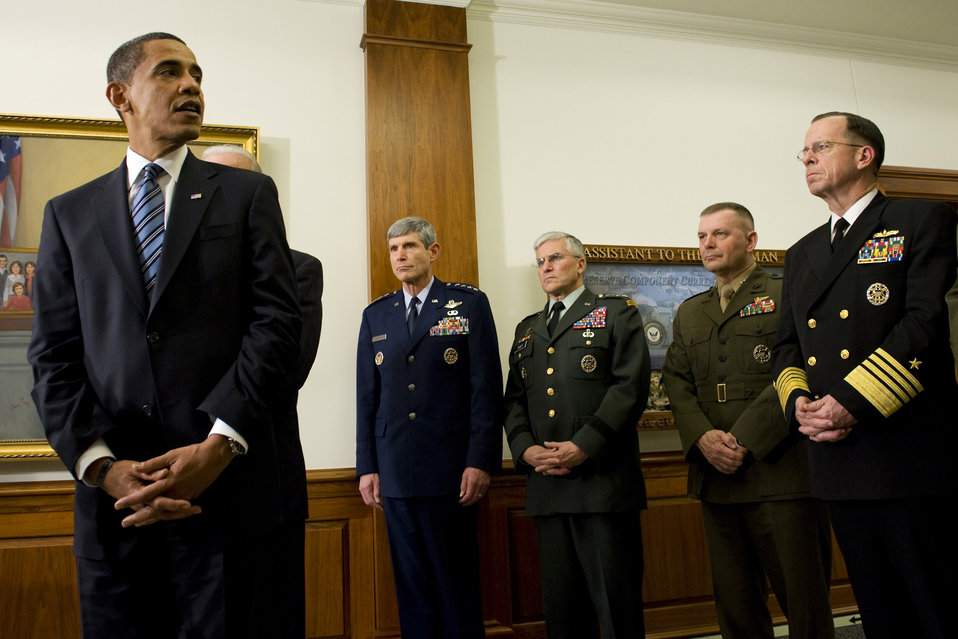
President Obama thanks troops, pledges support

President Barack Obama addresses the media during his first visit to the Pentagon since becoming commander in chief Jan. 28. President Obama and Vice President Joe Biden met with Defense Secretary Robert M. Gates and all the service chiefs, getting their input on the way ahead in Afghanistan and Iraq. Here, the president is flanked by Gen. Norton Schwartz, the Air Force chief of staff; Army Gen. George W. Casey, the Army chief of staff; Marine Gen. James E. Cartwright, vice chairman of the Joint Chiefs, and Navy Adm. Mike Mullen, the chairman of the Joint Chiefs.